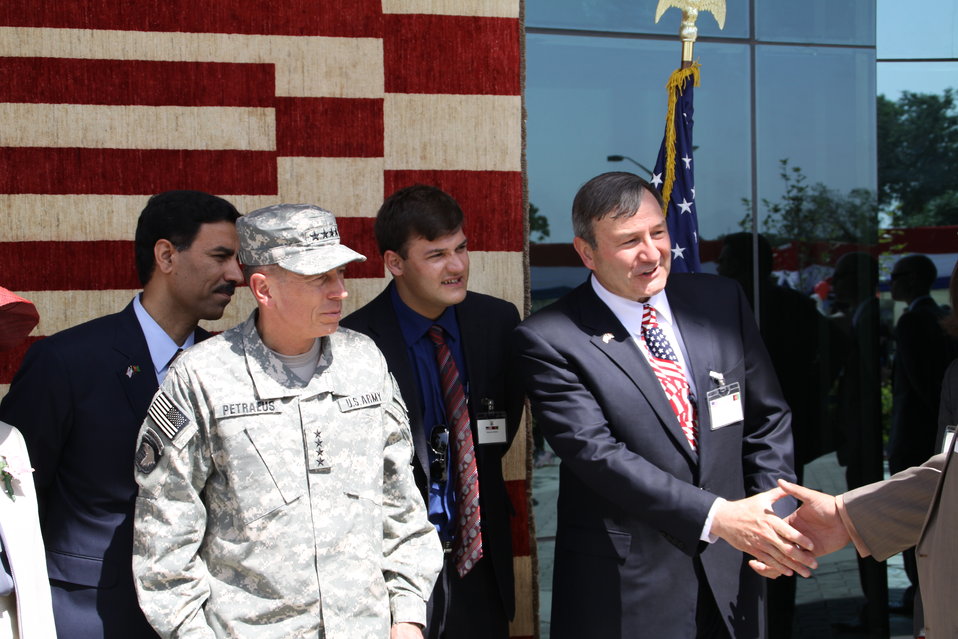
Kabul Official July 4th Celebration